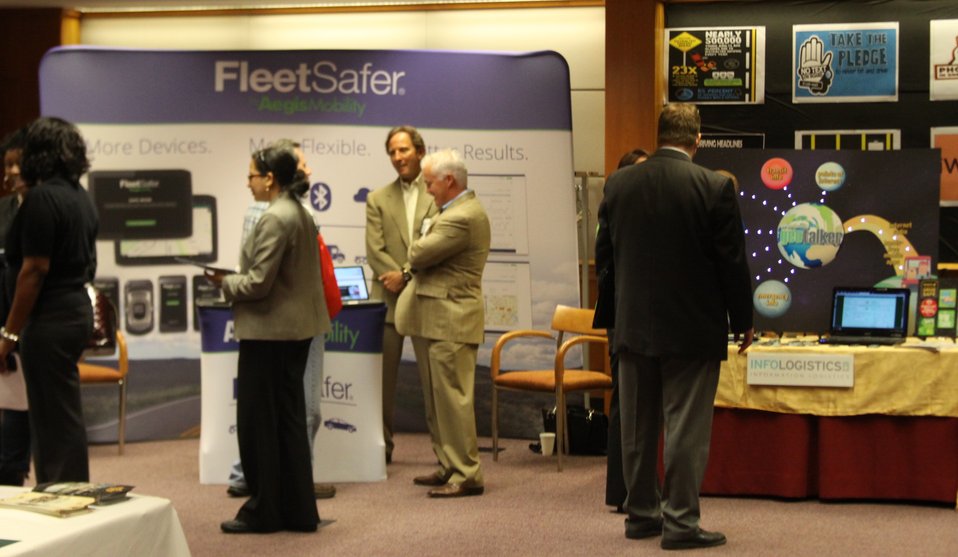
Distracted Driving Technology Showcase April 19, 2013